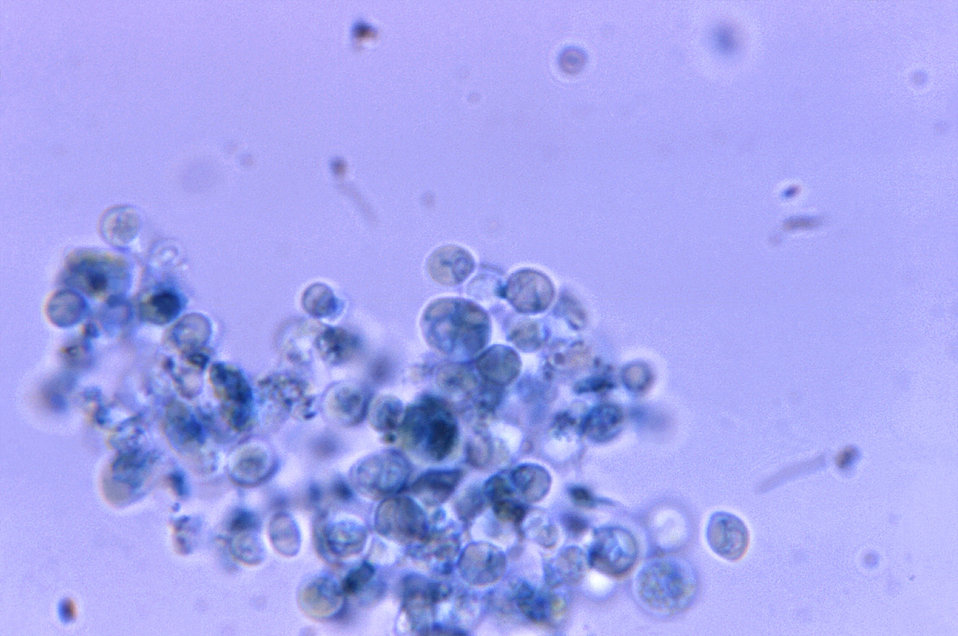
At a magnification of 1125X, this photomicrograph revealed the presence of a number of Chlorella sp. algal organisms.